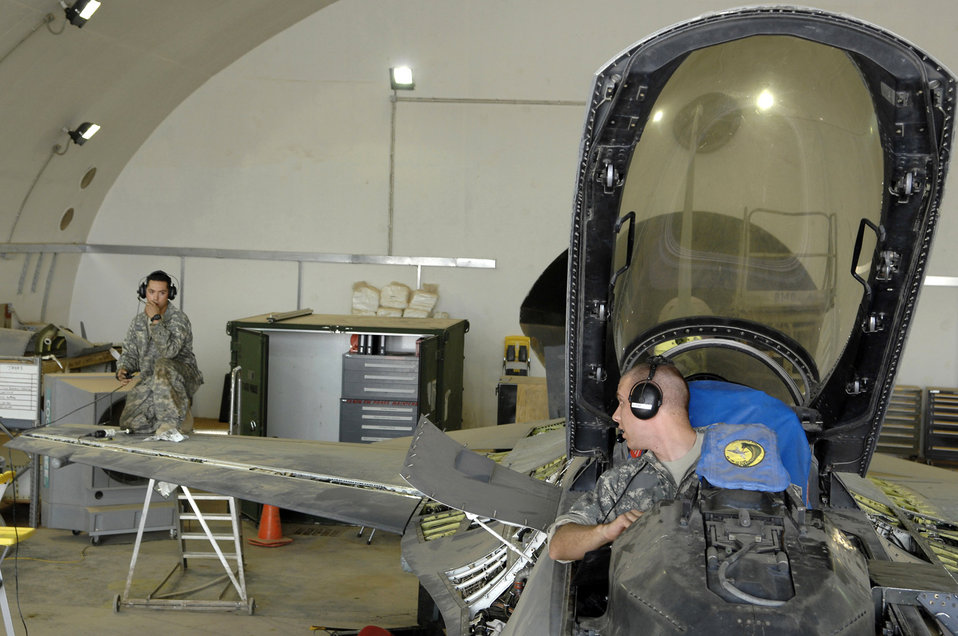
Just a phase

Staff Sgt. Caesar Rivera and Airman 1st Class Shane Bridges communicate back and forth during a test of the leading edge flap as part of a phase inspection on an F-16 Fighting Falcon June 18 at Joint Base Balad, Iraq. The flap is responsible for providing additional lift and drag that is critical for movement at slower air speeds. A phase inspection checks critical aircraft systems to ensure they are in working order and can continue to fly combat missions over Iraq. Sergeant Rivera is deployed from Nellis Air Force Base, Nev., and Airman Bridges is deployed from Shaw AFB, S.C. Both are 332nd Expeditionary Aircraft Maintenance Squadron crew chiefs.